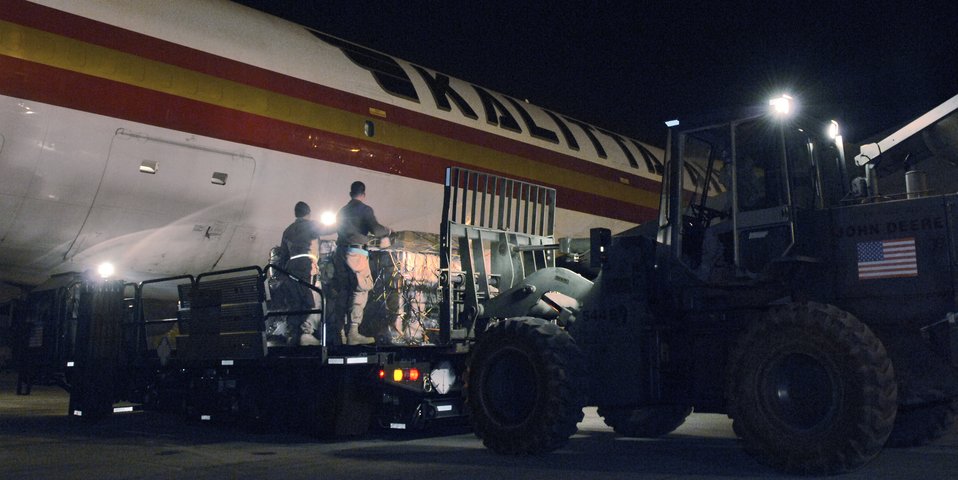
Unloading relief

ISLAMABAD, Pakistan -- U.S. Airmen unload relief pallets from an Alliance Airline Boeing 747 aircraft at Islamabad airport Nov. 12. The relief supplies are being flown to Pakistan in relief of an earthquake that hit the area Oct. 8. The team is from the 818th Contingence Response Group at McGuire Air Force Base, N.J.